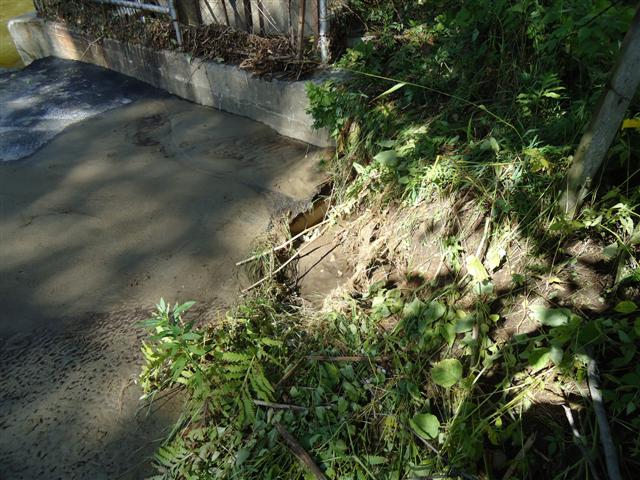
Storm damage at Eisenhower National Fish Hatchery in Vermont

Undermining at water intake.